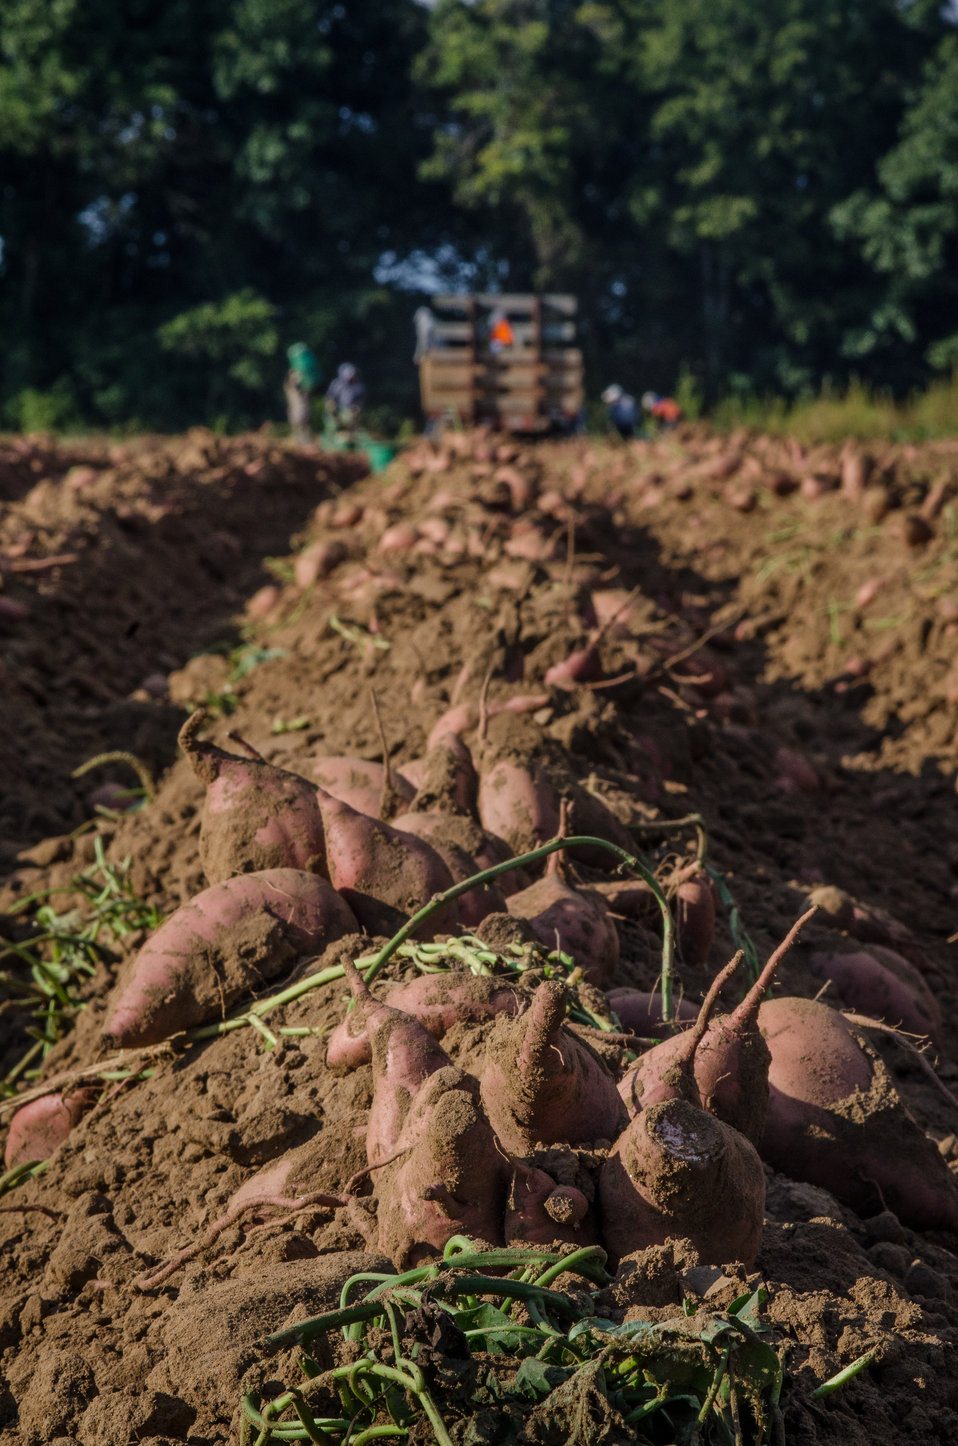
Harvested sweet potatoes are loaded onto a trailer at the Kirby Farms in Mechanicsville, VA on Friday, Sept. 20, 2013. The hand picked potatoes are taken to an onsite-heated warehouse to cure, a process that toughens the skin and brings the sweetness to a level normally expected in markets. Kirby Farms devotes 200 acres v to eggplant, spinach, beets, tomato, jalapeno peppers, melons and a variety of greens. Soybeans and small grain are grown on the remaining 300 acres. Using rotational crop practices allows Kirby Farms to double and triple crop yields. Wholesalers, who buy from this farm, sell the produce to major supermarkets in the Mid-Atlantic region, from North Carolina to Maryland. Restaurants in the local area prepare and serve the local bought produce to patrons in the Richmond, VA metropolitan area.